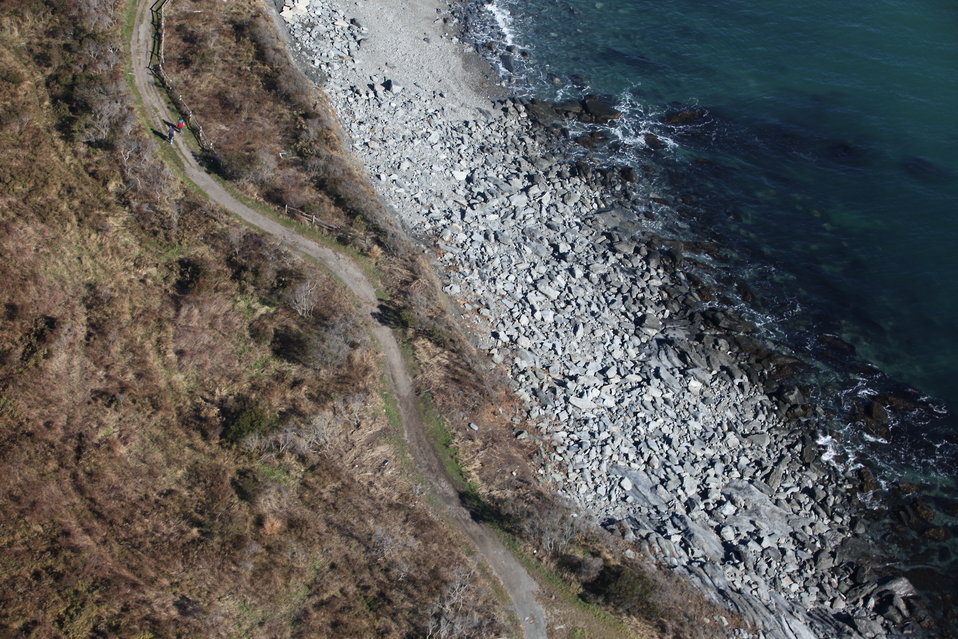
Overhead view of erosion of trail at Sachuest Point National Wildlife Refuge

Aerial view of trails at Sachuest Point National Wildlife Refuge which is now closer to the edge due to storm Sandy.